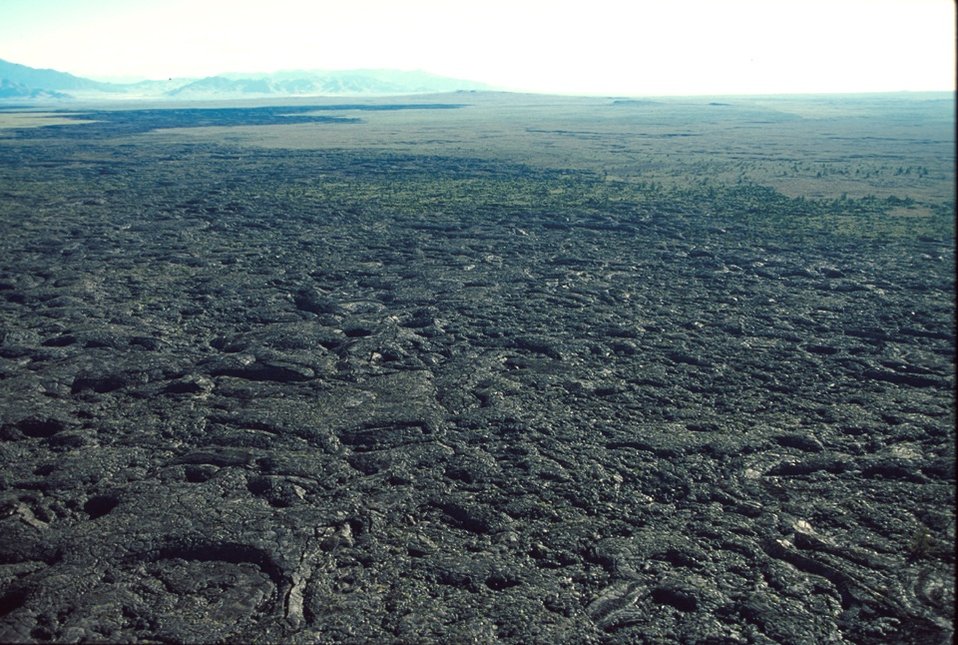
Shoshone Field Office USRD Upper Snake River District